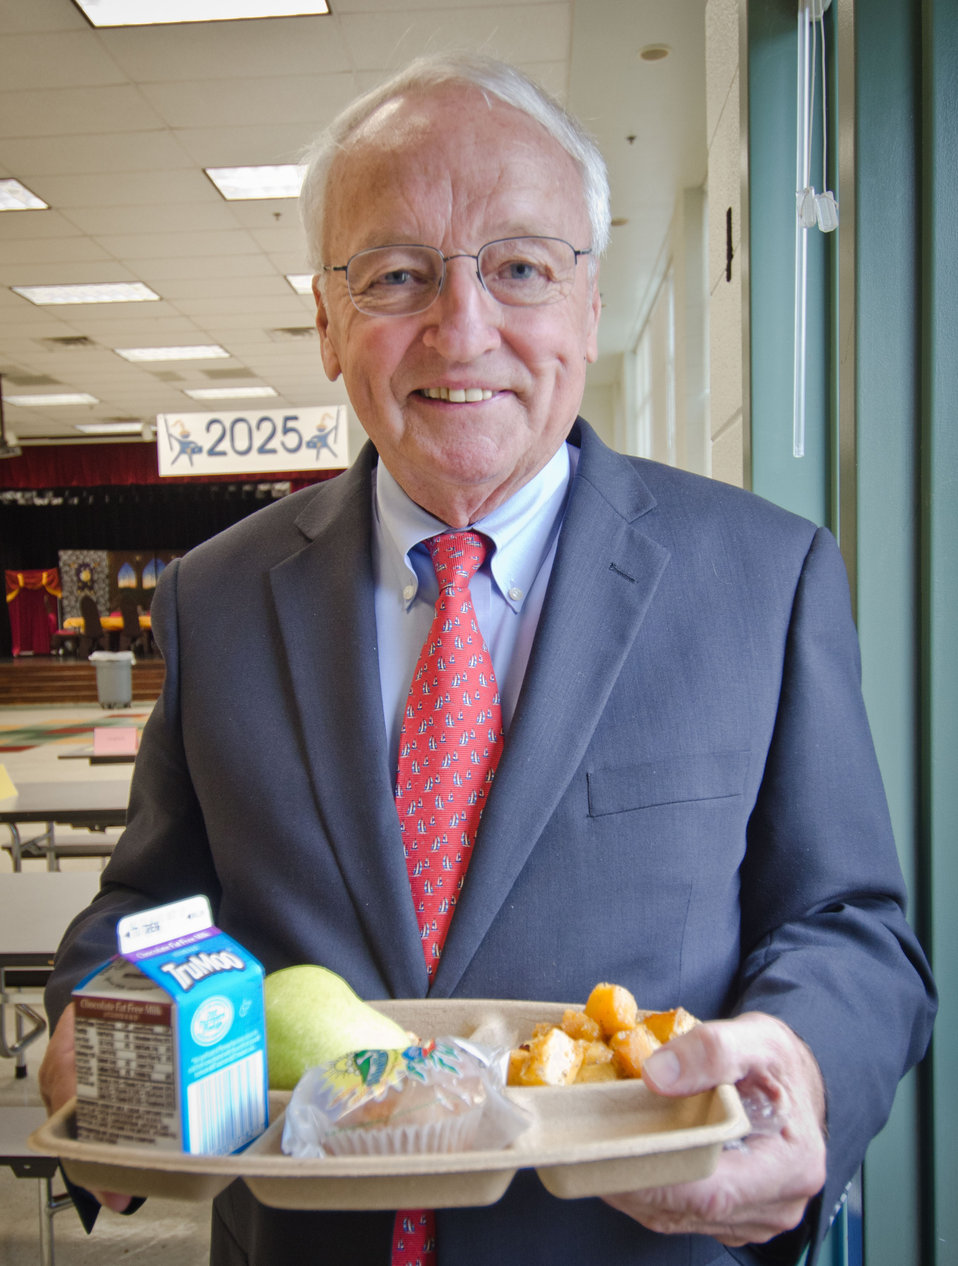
Under Secretary for Food, Nutrition and Consumer Services Kevin Concannon enjoyed a lunch during his visit to Nottingham Elementary School in Arlington, VA, on Wednesday, October 12, 2011. For this National School Lunch Week event, farmers from Big Riggs Farm, Romney, WV and Maple Avenue Market Farm, Vienna, VA were very popular with the students today. The menu included roasted chicken, roasted butternut squash with dried cranberries, farm fresh mixed lettuce salad, turkey wraps, pita wedges, hot muffins, carrots, Asian pears and more.